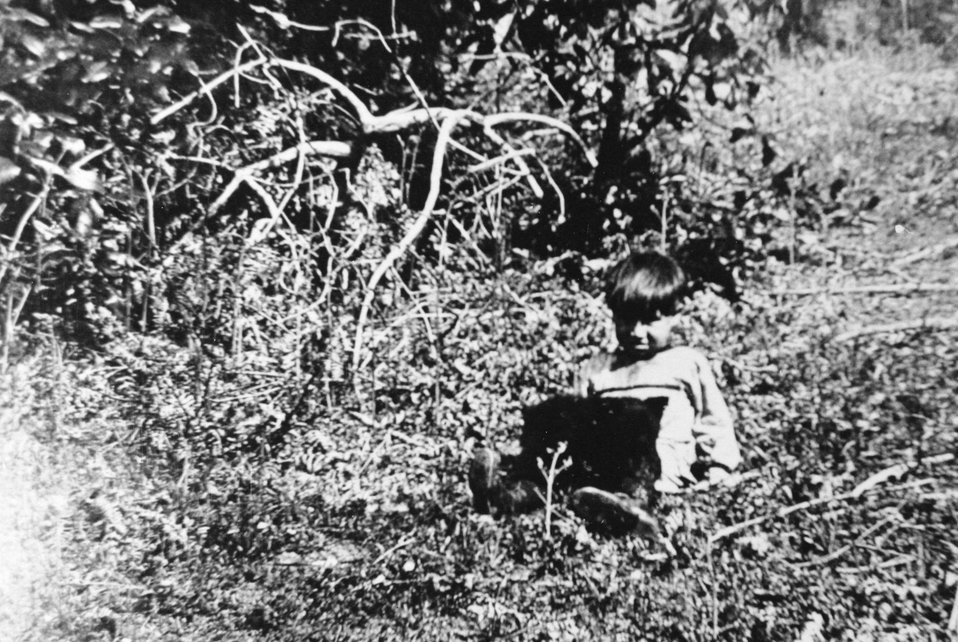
George Hall with bear cub along the Rogue River